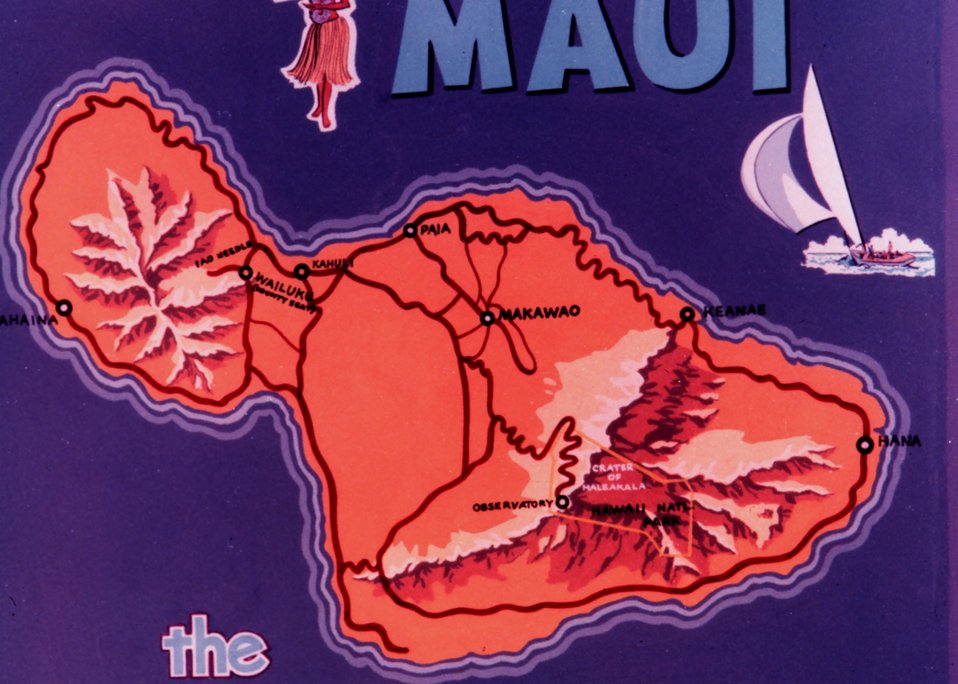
Map of Maui